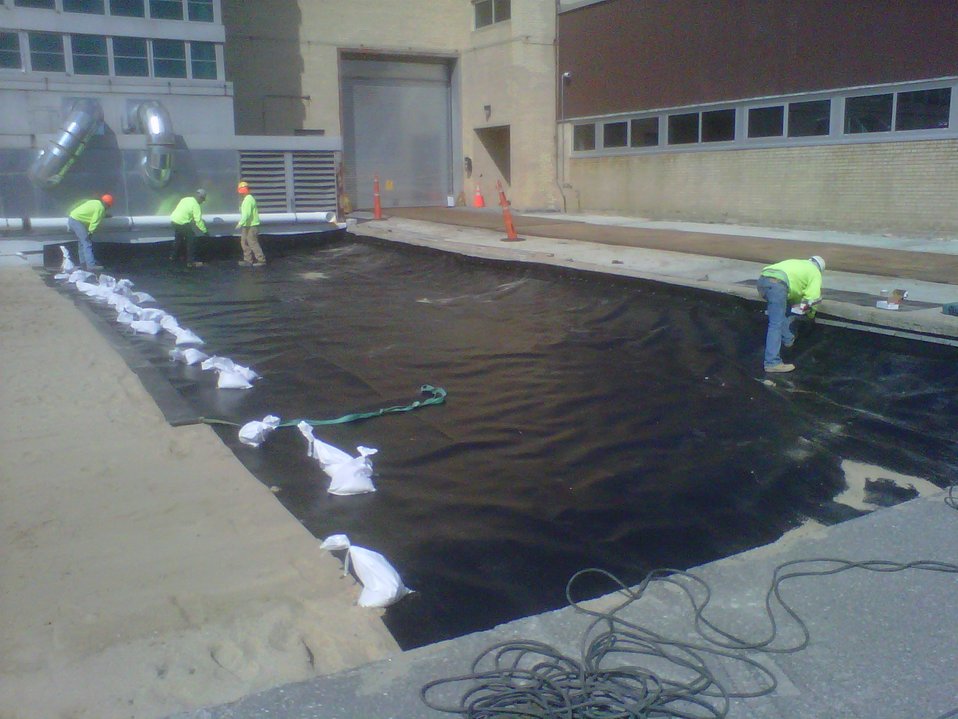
Brookhaven Recovery Act Workers Install Cap, Advance Reactor Decommissioning

Recovery Act workers install a portion of the impermeable cap at the Brookhaven Graphite Research Reactor.

Recovery Act workers completed the installation of an impermeable cap over the grounds of a reactor building at Brookhaven National Laboratory (BNL) to prevent rain and other moisture from infiltrating radiologically contaminated soil. Installation of the cap is part of broader Recovery Act work at BGRR that involves decommissioning the reactor.